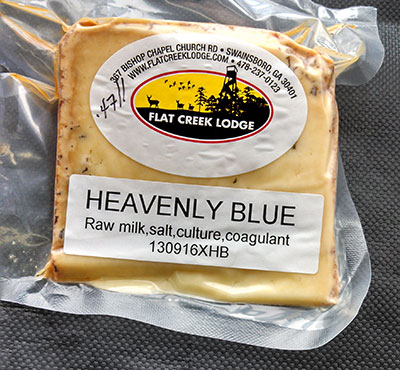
RECALLED – Cheese]

December 24, 2013 – Product Recall – Flat Creek Farm & Dairy Recalls Cheese Because of Possible Health Risk.